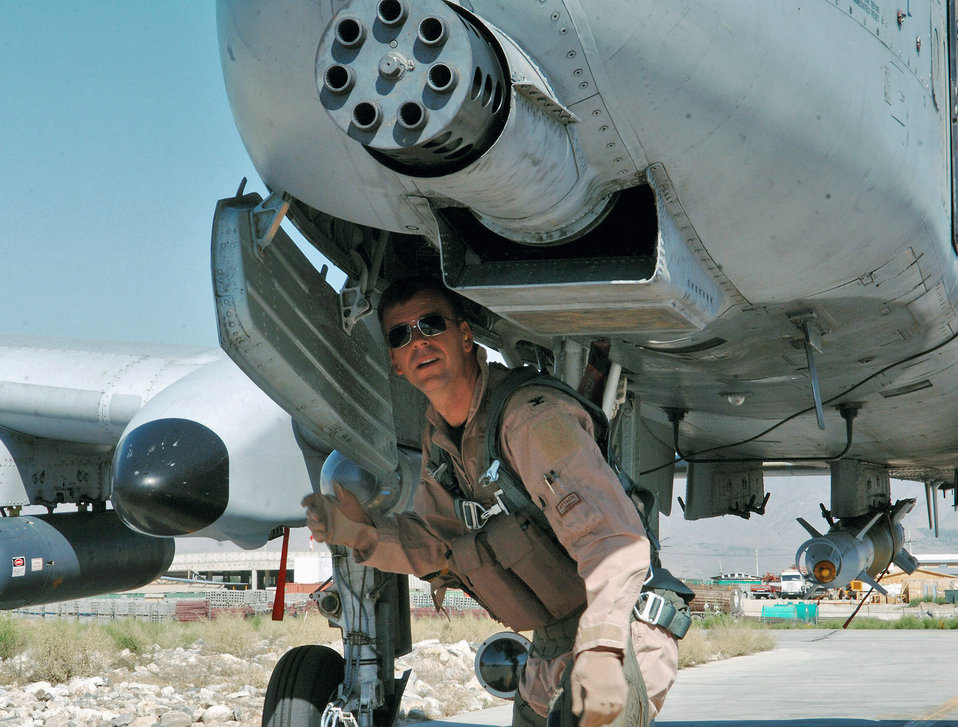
Airpower summary for Aug. 5, 2007

Col. Bruce McClintock performs a pre-flight inspection of his A-10 Thunderbolt II at Bagram Air Base, Afghanistan, prior to a mission. Col. McClintock, the 455th Air Expeditionary Wing vice commander, is deployed from Davis-Monthan Air Force Base, Ariz.